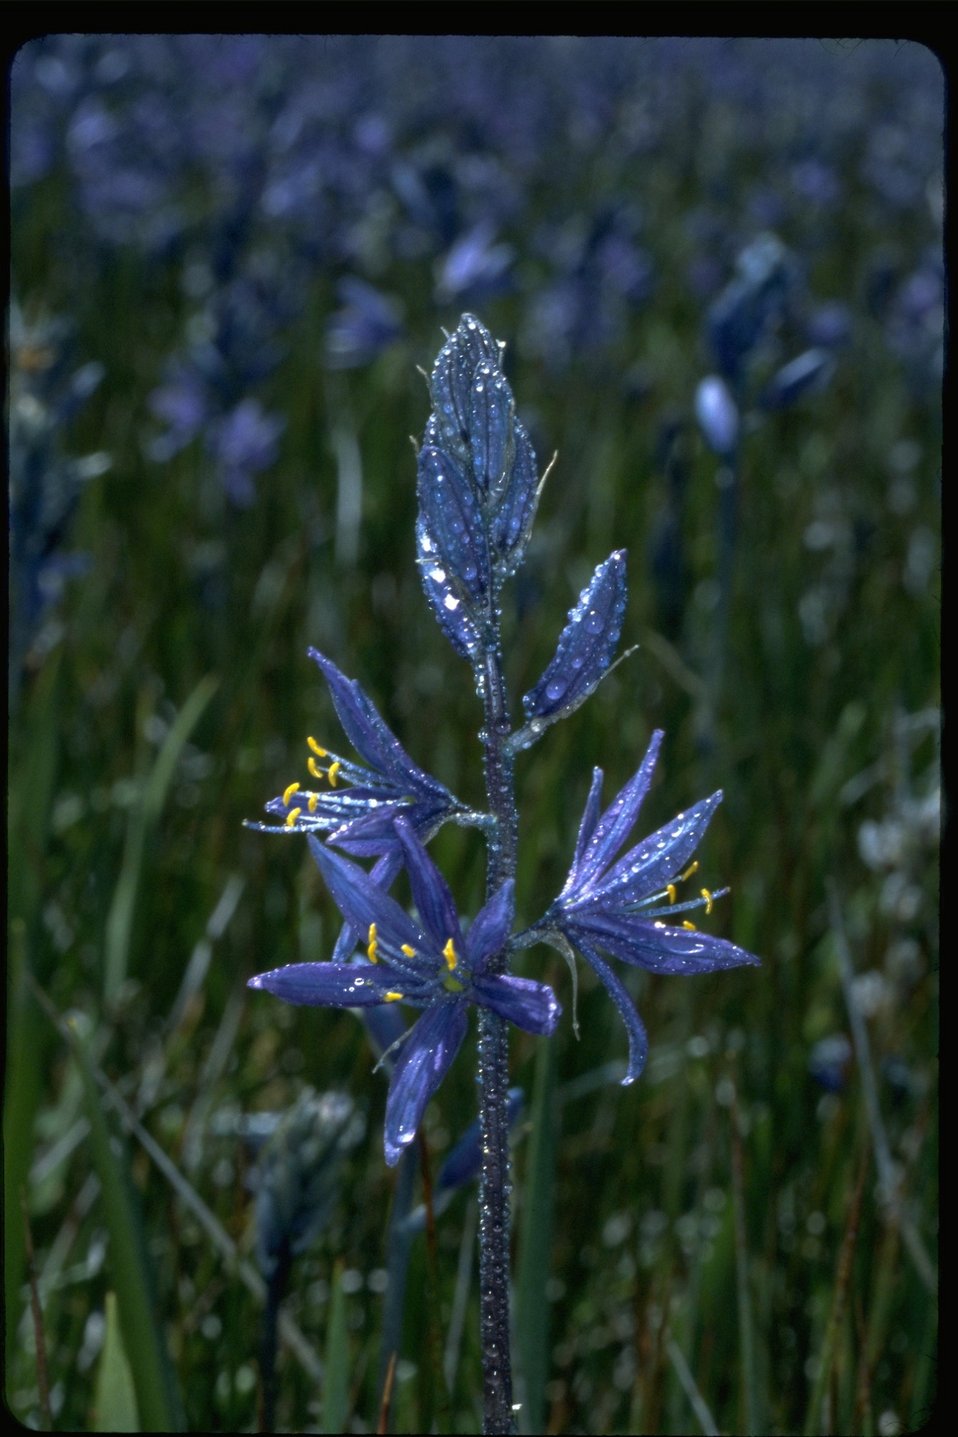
Close up shot of Blue Camas.